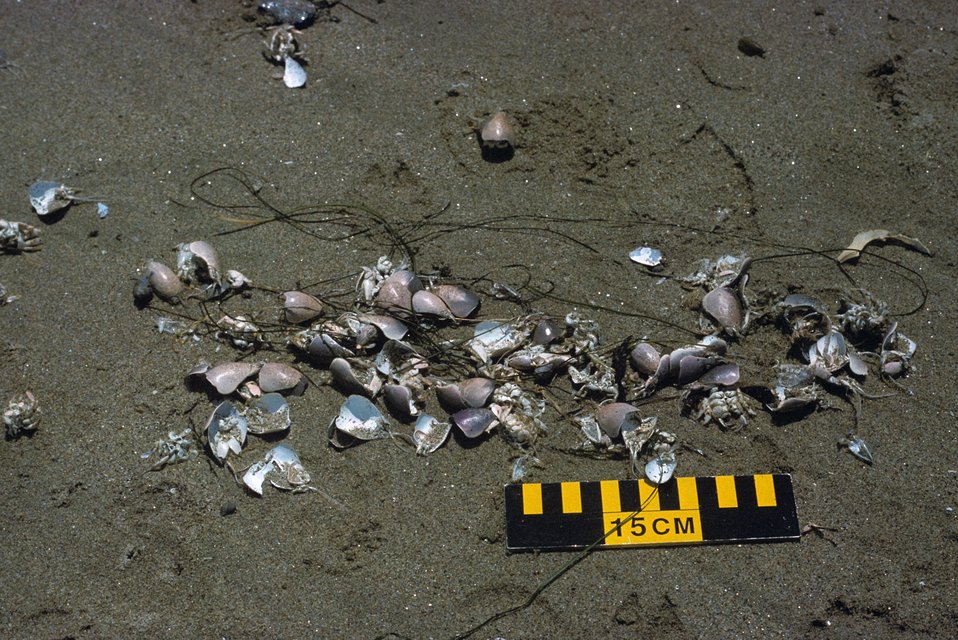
Point Reyes Great Beach. Sand crab shells washed up in the swash zone.